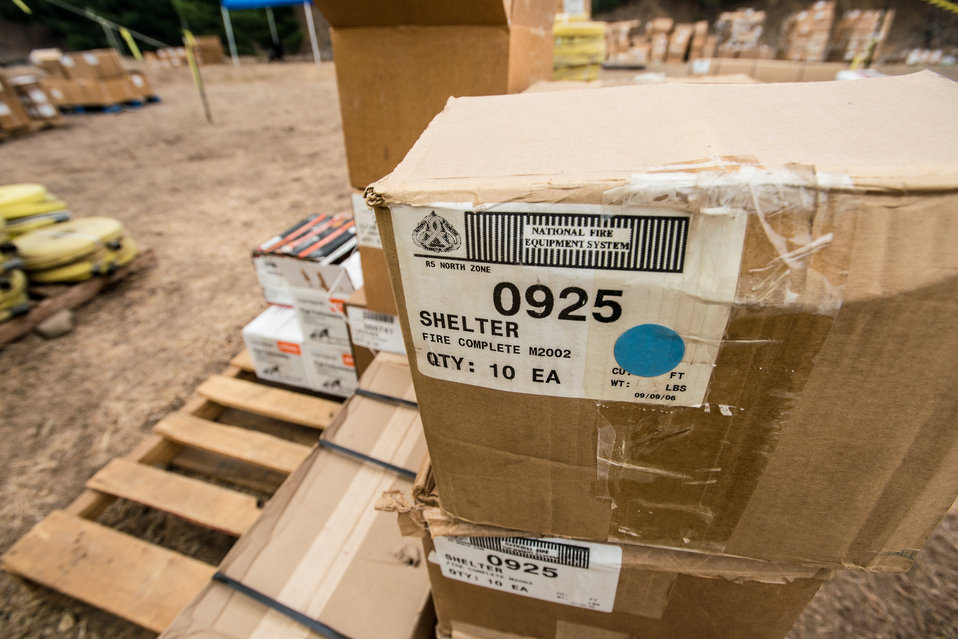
All firefighters carry a servicable fire shelter, if used or unservicable, new ones are available for firefighters at the Salmon River Complex Fire burning northwest of Sawyers Bar and west of Etna and Yreka, CA in the Klamath National Forest, on Tuesday, Aug. 6, 2013. It is vital that when a firefighter needs fire resistant clothing, a Mccloud Tool, Pulaski Axe, Combi Tool, or pumps, connectors and hoses to draw water from a portable reservoirs to pressurize hand line (fire hoses), they go to this centralized point to get readily available item for issue or replacement as needed. These supplies have been shipped from National Interagency Supply Cache System depots and/or other caches to this and other fires across the nation.